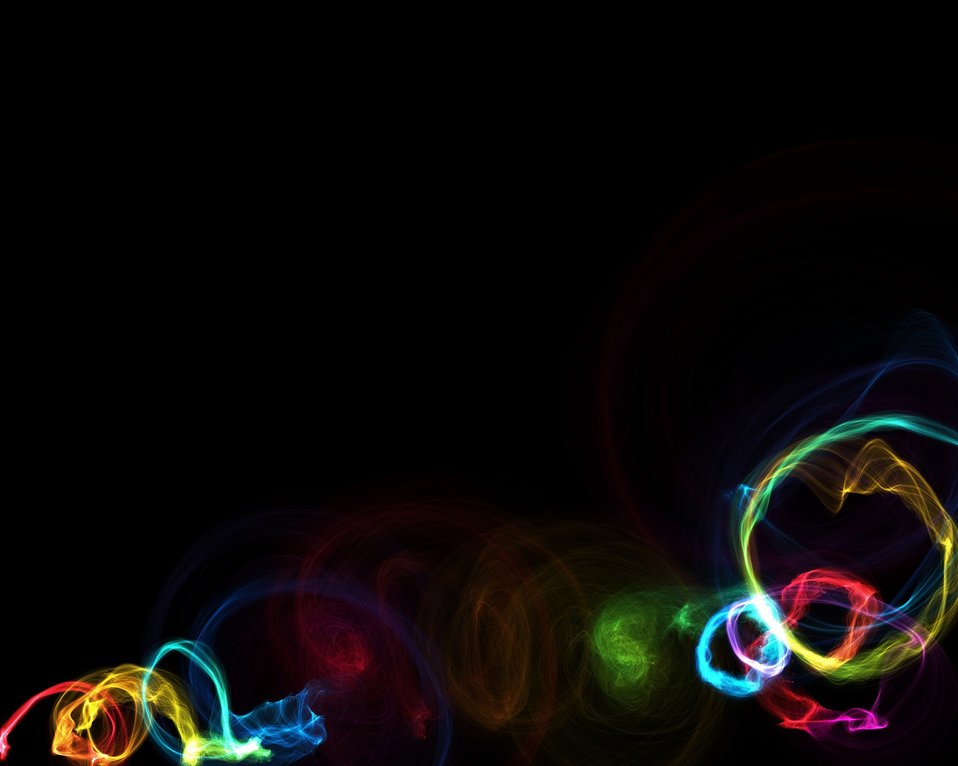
Rainbow ribbon background

Rainbow thread ribbon designed on a black background..